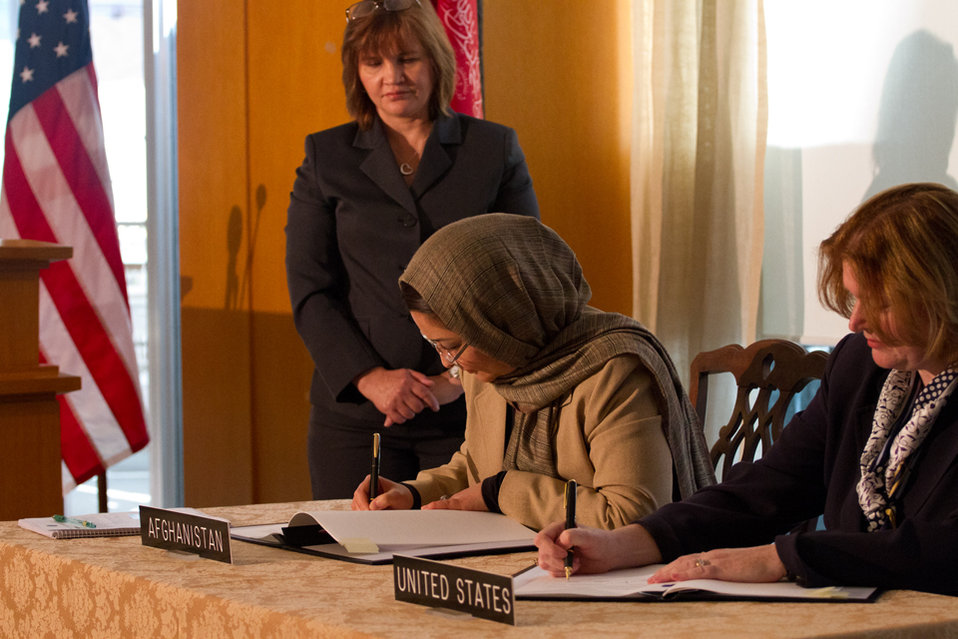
Assistant Secretary Richard and Afghan Minister of Public Health Dalil

Assistant Secretary for Population, Refugees, and Migration Anne C. Richard and Afghan Minister of Public Health Dr. Suraya Dalil sign a memorandum of understanding at the U.S. Department of State in Washington, D.C., on April 25, 2012.